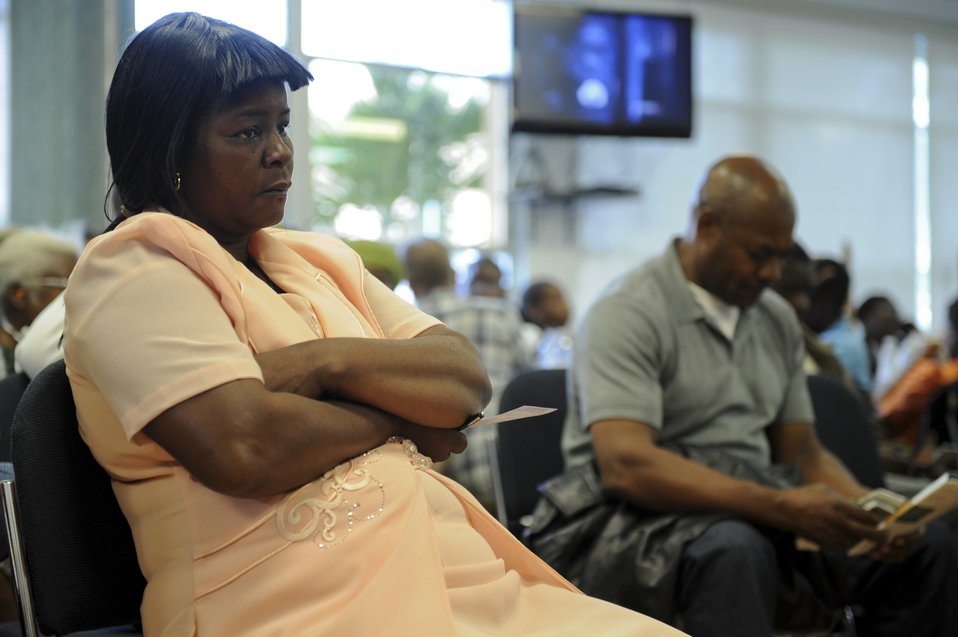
Haiti mission

U.S. citizens living in Haiti wait to board a U.S. Air Force C-130 Hercules aircraft at the Puerto Rico Air National Guard's 156th Airlift Wing dining facility, Jan. 17, for transport back to the United States. Department of Defense assets were dispatched to Haiti to assist with humanitarian assistance and disaster relief after a 7.0-magnitude earthquake hit the country Jan. 12.